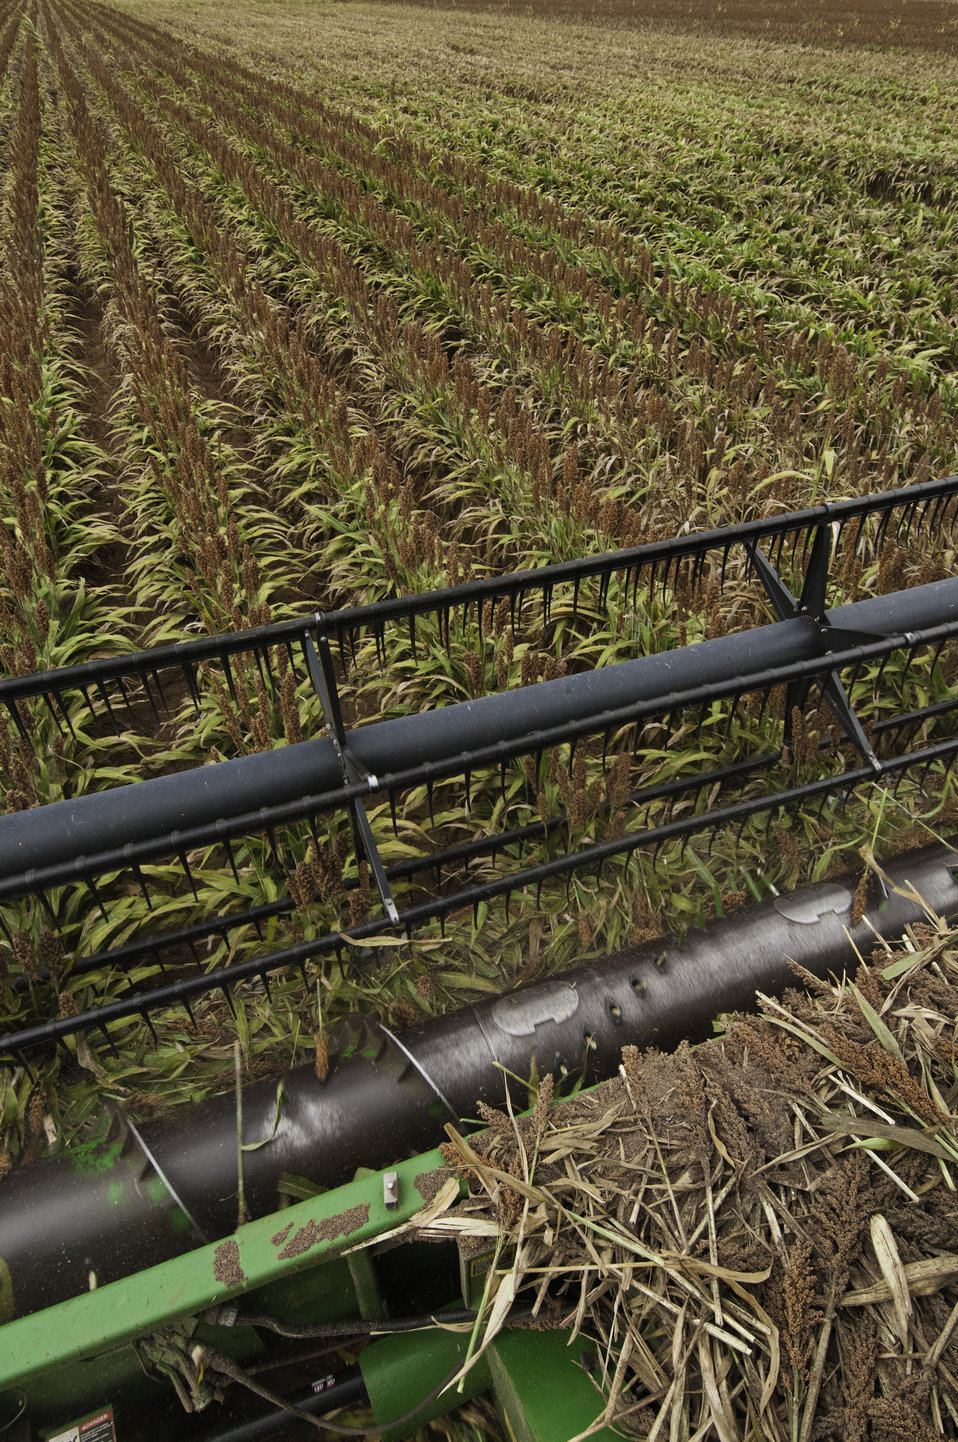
Grain sorghum is harvested on the Wilder Farms in Navasota, TX on Aug. 23, 2013.